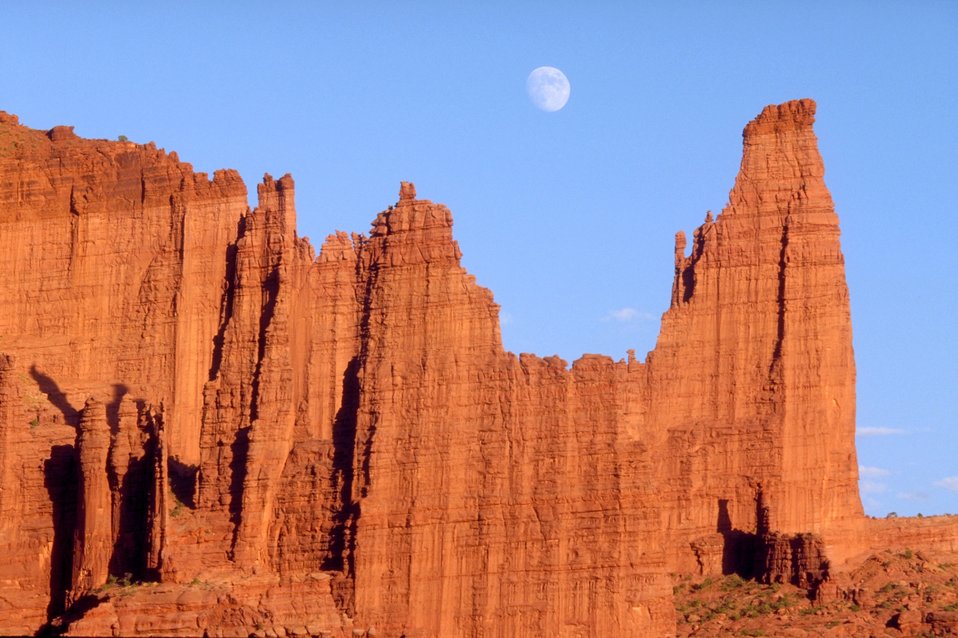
Fisher Towers along Highway 128, near Moab, Utah.